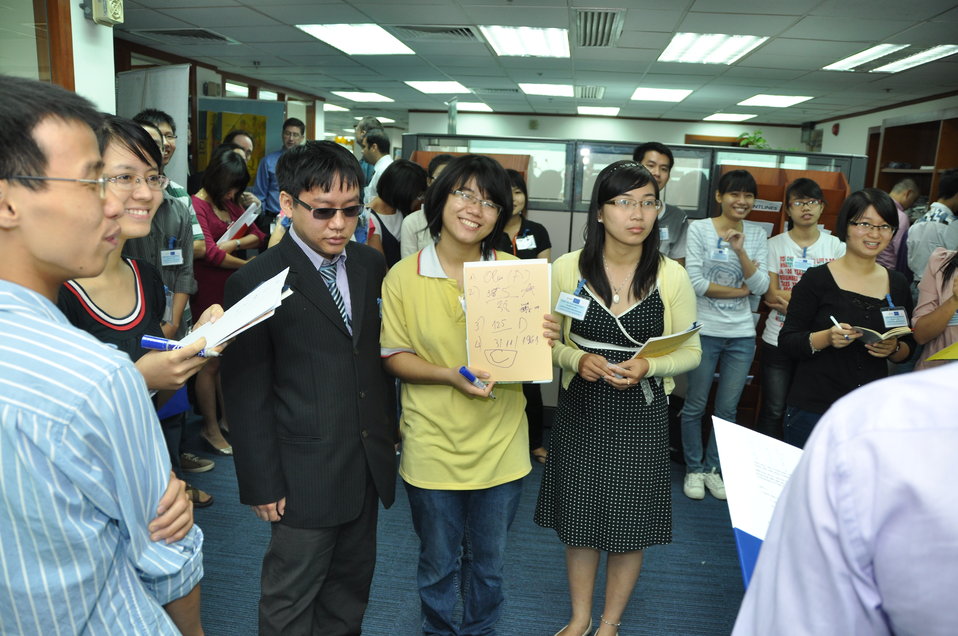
USAID 50th Anniversary Open House, USAID Vietnam